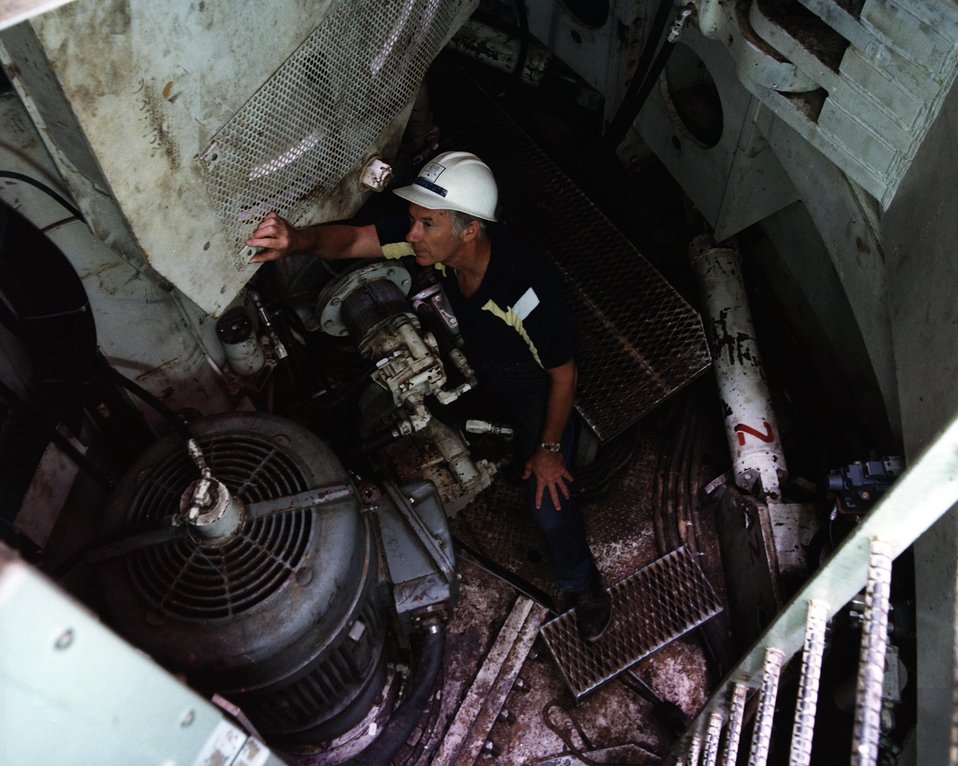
LOWER DECK OF BLIND SHAFT BORER SHOWING ONE OF THE SIX, 125-HORSEPOWER ELECTRIC DRIVE MOTORS.

ART OF GRIPPERR RING AND CYLINDER MOTORS FOR THE BIT CUTTER HEAD. THE BLIND SHAFT BORER SYSTEM IS A NEW CONCEPT FOR BORING VERTICAL COAL MINE SHAFTS. THE BORER MACHINE IS UNIQUE AS IT IS THE ONLY ONE OF ITS KIND IN THE WORLD, AND IS EXPECTED TO SIGNIFICANTLY REDUCE THE TUME REQUIRED TO DEVELOP NEW COAL MINES. THE MACHINE IS OVER 24 FEET IN DIAMETER, NEARLY 60 FEET HIGH, WEIGHS 350 TONS, AND CAN BORE 40 FEET PER 24-HOUR DAY. THE TOTAL SYSTEM INCORPORATES CONVENTIONAL HOISTING AND CONCRETE LINING EQUIPMENT. THE INITIAL FIELD TRIAL IS AT U.S. STEEL'S OAK GROVE MINE, AND TESTING STARTED IN EARLY DECEMBER AND WILL CONTINUE INTO THE SPRING 1979.